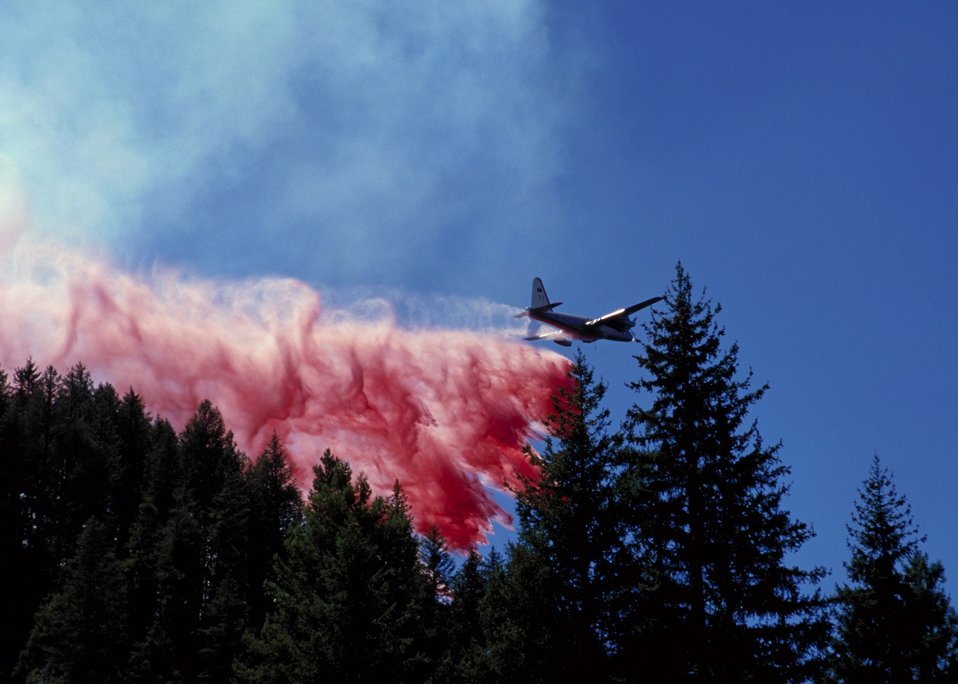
Retardant tanker Fire Season 2000 Lower Snake River District LSRD